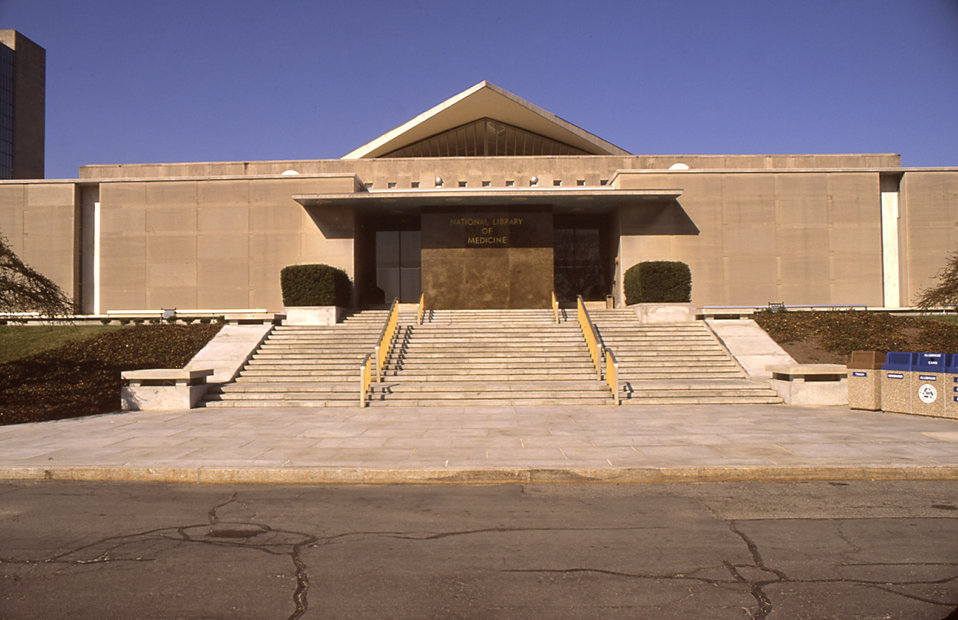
This 1999 photograph depicted the National Library of Medicine (NLM), located on the campus of the National Institutes of Health in Bethesda, Maryland. It is the world's largest medical library, collecting materials, and providing information and research services in all areas of biomedicine and health care.The NLM's MedlinePlus� online database, can help consumers find information on health topics of all kinds, including diseases, wellness, hospitals, physicians, and pharmaceuticals. NLM also coordinates the National Network of Libraries of Medicine, which provides health care professionals and the public equal access to biomedical and health care information resources.